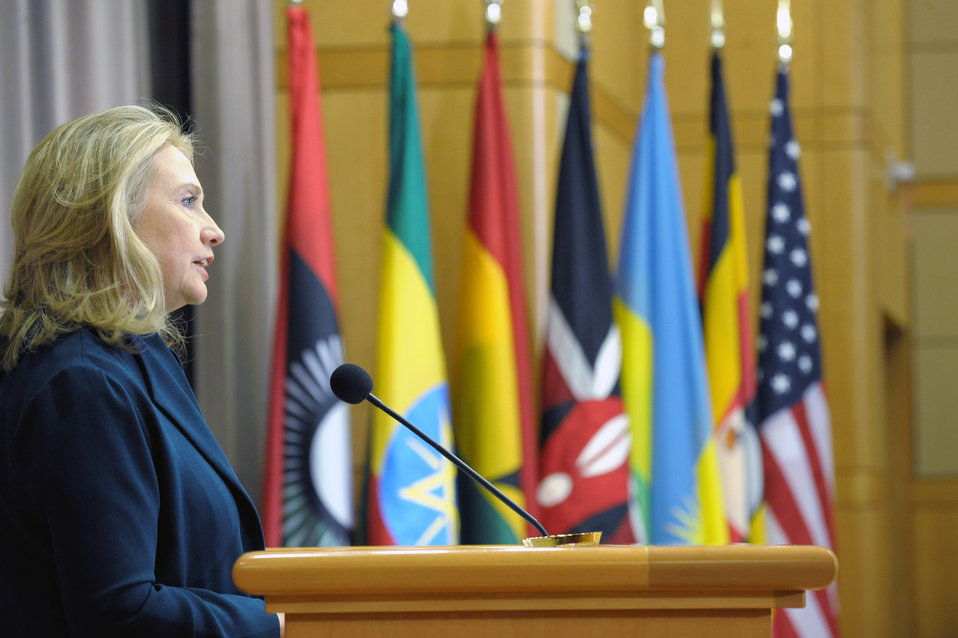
Secretary Clinton Delivers Remarks at Congressional Coalition in Adoption Institute's Africa Way Forward Project Summit

U.S. Secretary of State Hillary Rodham Clinton delivers remarks at the Congressional Coalition in Adoption Institute’s Africa Way Forward Project Summit at the U.S. Department of State in Washington, D.C., on November 8, 2011.